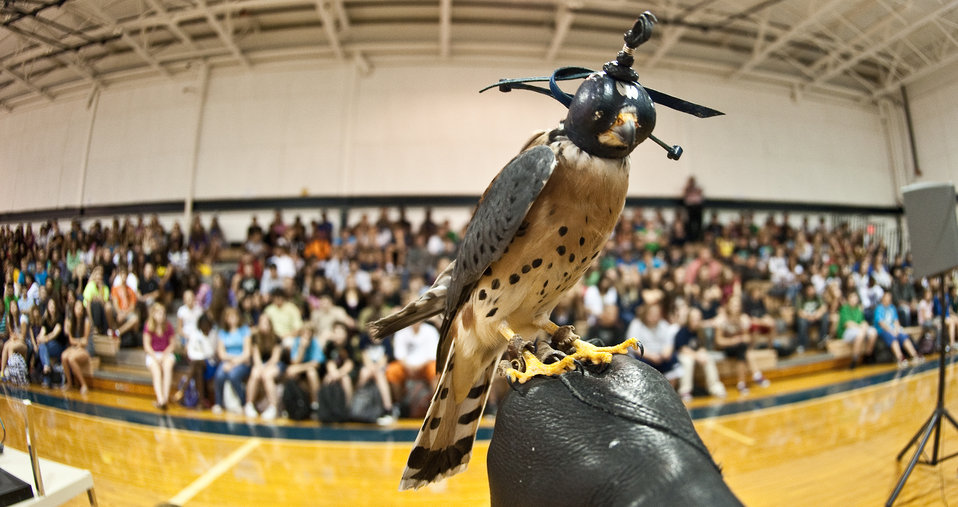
Small kestral captures school's attention

Cadet 3rd Class Danielle Cortez and